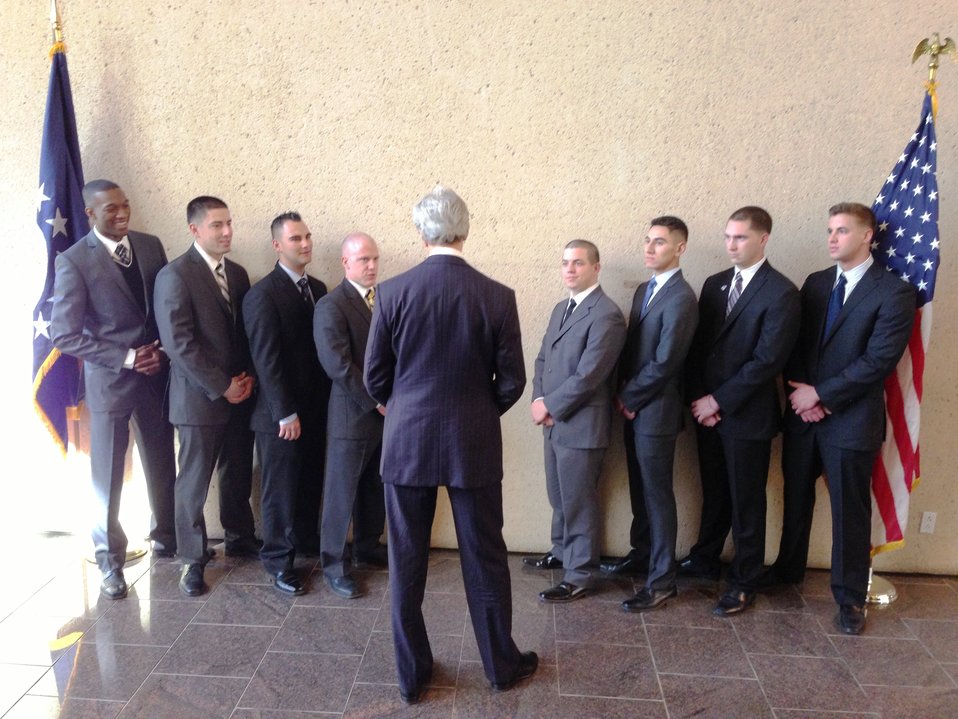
Secretary Kerry Speaks With Marine Security Guards

U.S. Secretary of State John Kerry speaks with U.S. Marine Security Guards at the U.S. Embassy in Riyadh, Saudi Arabia, on March 4, 2013.